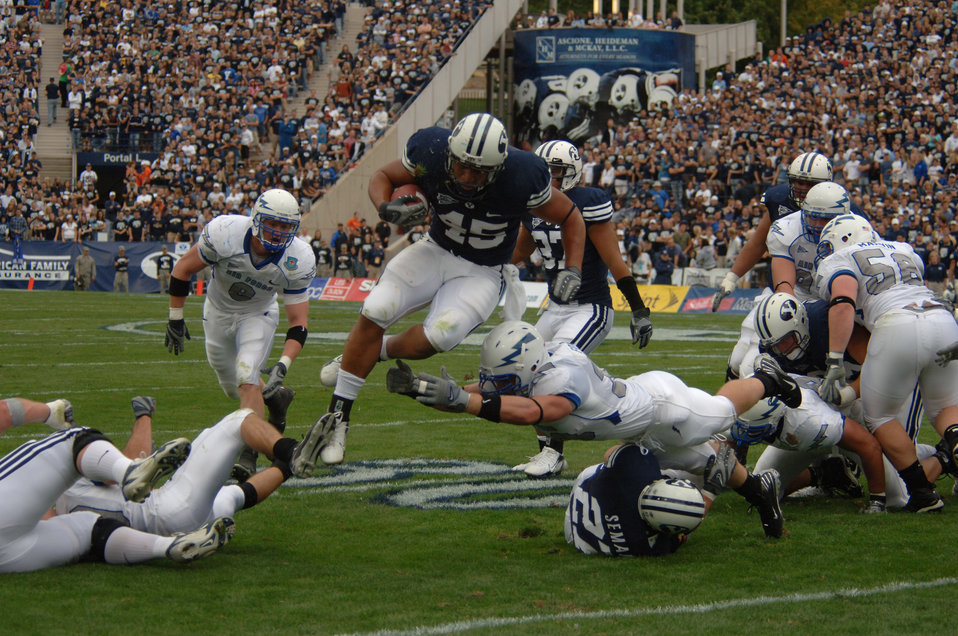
Falcons eye history after BYU loss, seeks redemption at Annapolis

Air Force linebacker Drew Fowler reaches for leaping Brigham Young running back Harvey Unga during BYU's 31-6 win over the Falcons Sept. 22 in Provo, Utah. Unga ran for a game-high 111 yards on 22 carries, averaging five yards per carry.